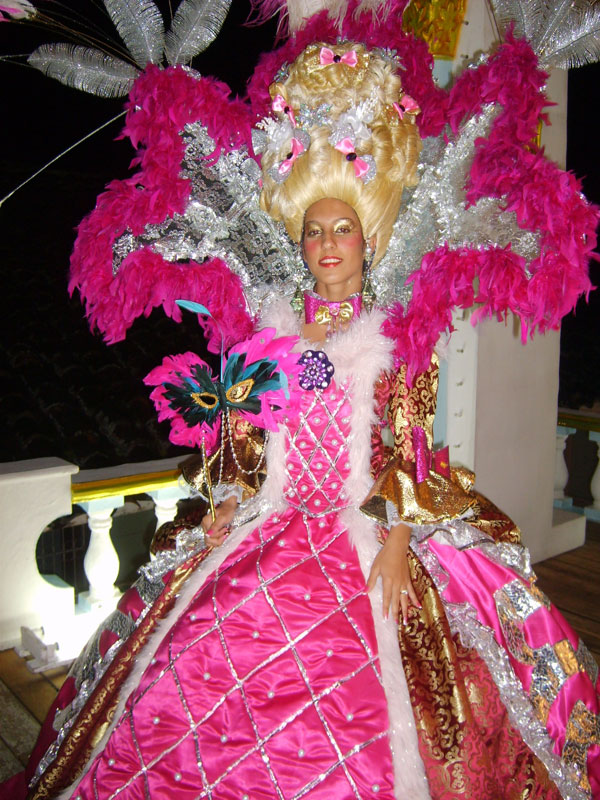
my photos